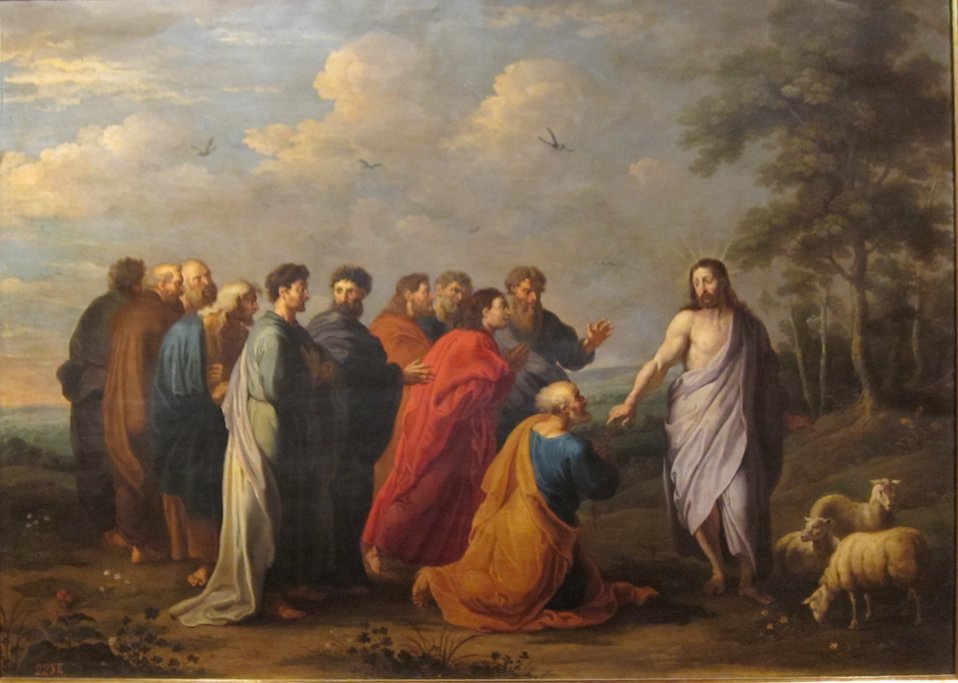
'La Consigna de la Iglesia', painting by Willem van Herp (I),